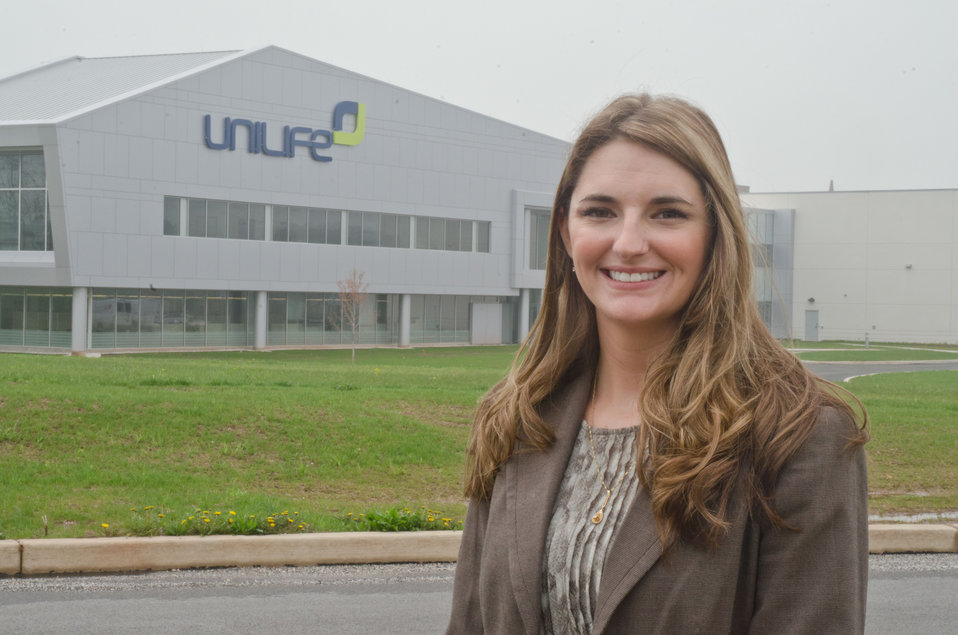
Unilife Community Relations Coordinator Amanda Gemmill in front of Unilife headquarters and manufacturing facility on Monday, April 20, 2011 in York, PA. Unilife is a medical device company focused on the design, development, manufacture and supply of a proprietary range of retractable syringes. In partnership with Sanofi-aventis, Mikron Group, and MDMA, U.S. Department of Agriculture Rural Development was able to guarantee $18,000,000 through its Business and Industry Guaranteed Loan Program to construct a custom-built, global headquarters and commercial production facility in York, Pennsylvania. The 165,000 sq. ft. facility was completed in late 2010 and can accommodate future growth as well as the Company’s projected demand from pharmaceutical and healthcare companies for its proprietary range of Unifill ready-to-fill (prefilled) and Unitract general purpose safety syringes. Stage one of the facility is designed to accommodate the production of up to 400 million Unilife syringes per year and to meet stringent pharmaceutical standards for primary drug containers. Adjacent to the manufacturing facility is Unilife’s global headquarters that support administrative, marketing, new product development, quality laboratories and other operational functions. Unilife, which first arrived in Pennsylvania in 2006. The company has doubled its employees for the past three years. There are approximately 150 employees, and they expect to double the number by 2015.